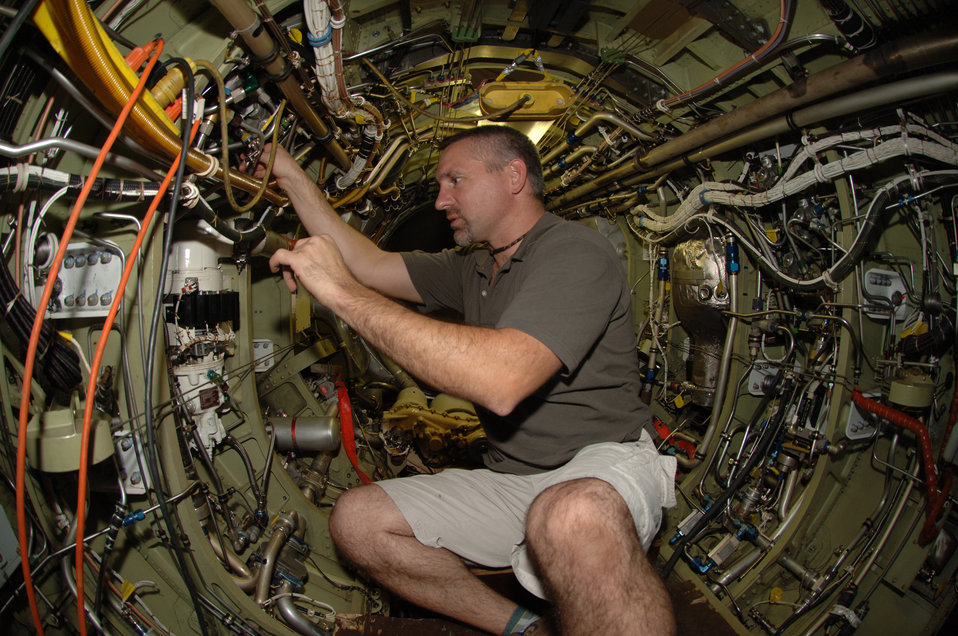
U-2 phase inspection

Jay Gardner, one of 19 Lockheed employees assigned to a forward-operating base in Southwest Asia, inspects hydraulic tubing in a U-2 fuselage. A U-2 receives a phase inspection every 400 hours.